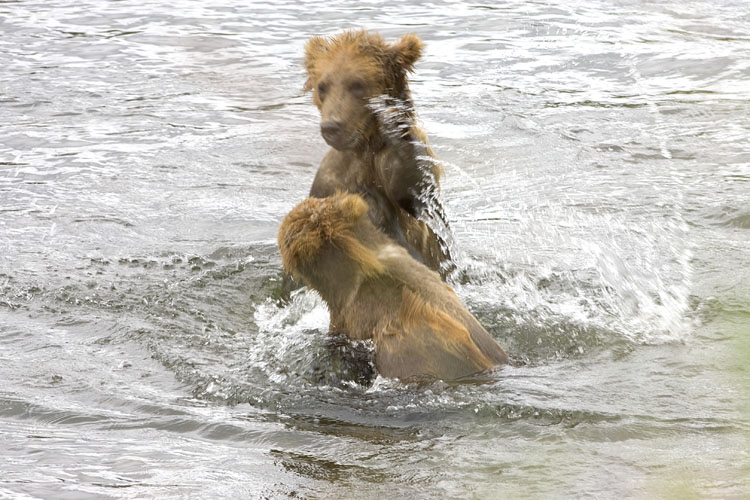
KOD Hildebrand (10)

Kodiak National Wildlife Refuge- Wildlife